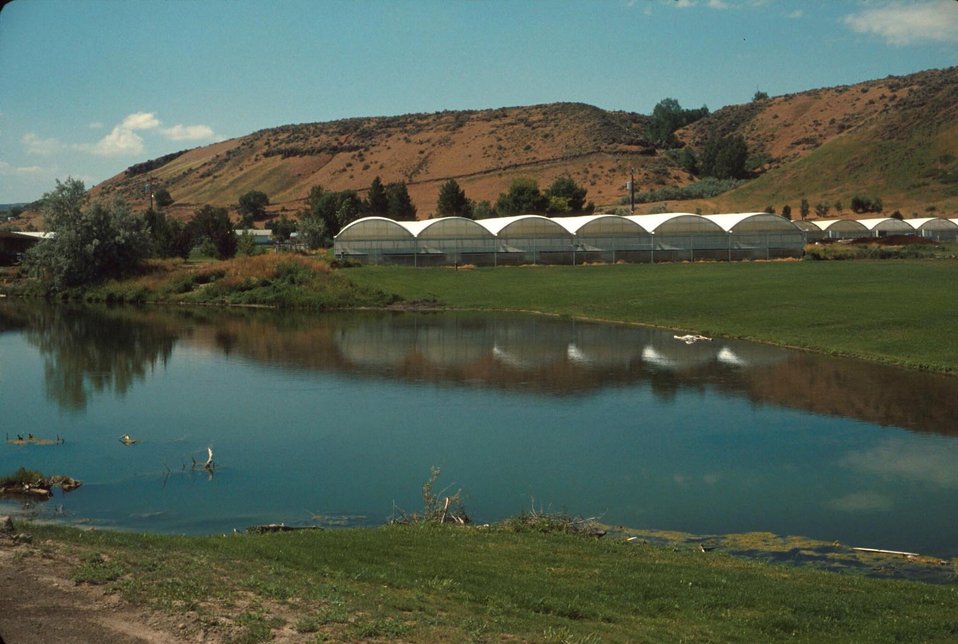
Geothermal Greenhouse, Hagerman Valley Shoshone Field Office USRD Upper Snake River District